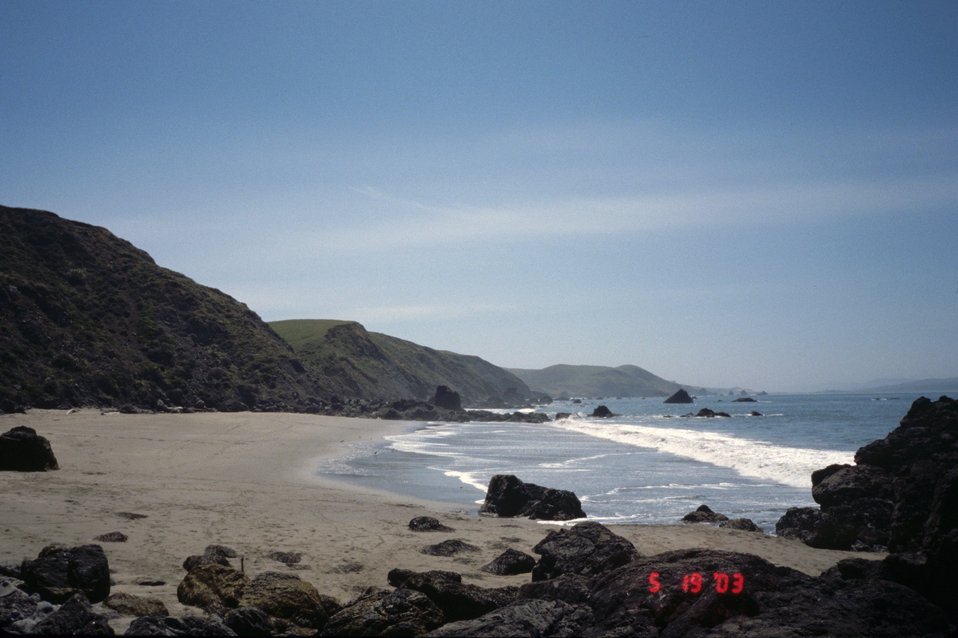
Pinnacle Gulch Beach